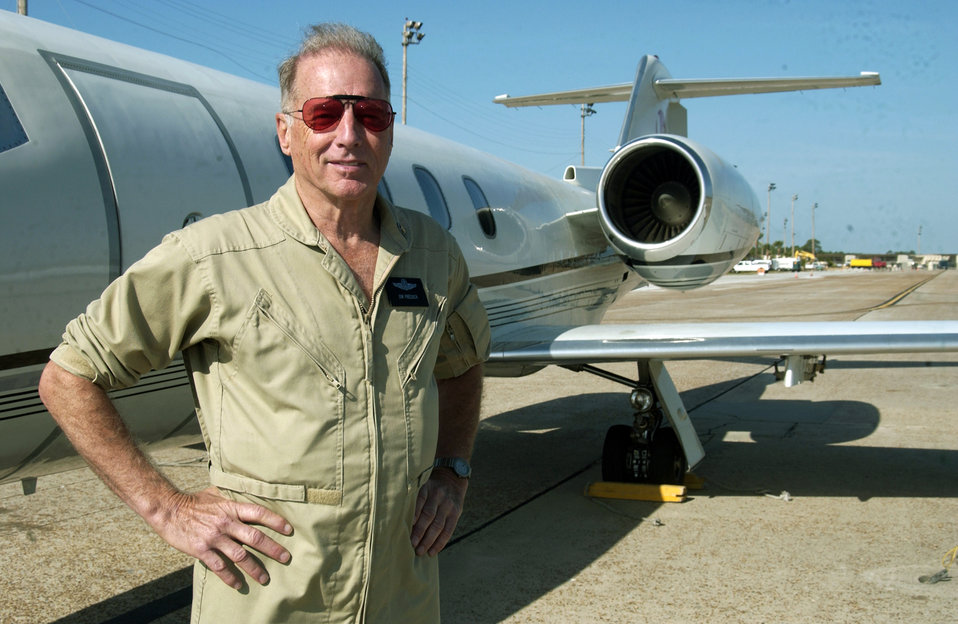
Duck hunting William Tell style

TYNDALL AIR FORCE BASE, Fla. -- Retired Lt. Col. Jim Presick stands by a Learjet here Nov. 15. Colonel Presick tows a banner some 2,000 feet behind the jet as a target for F-15 Eagle pilots competing in William Tell 2004. This is the 50th anniversary of the William Tell competition, which tests an aircrew's ability to perform under combat conditions. Colonel Presick is a contractor from Newsport News, Va.